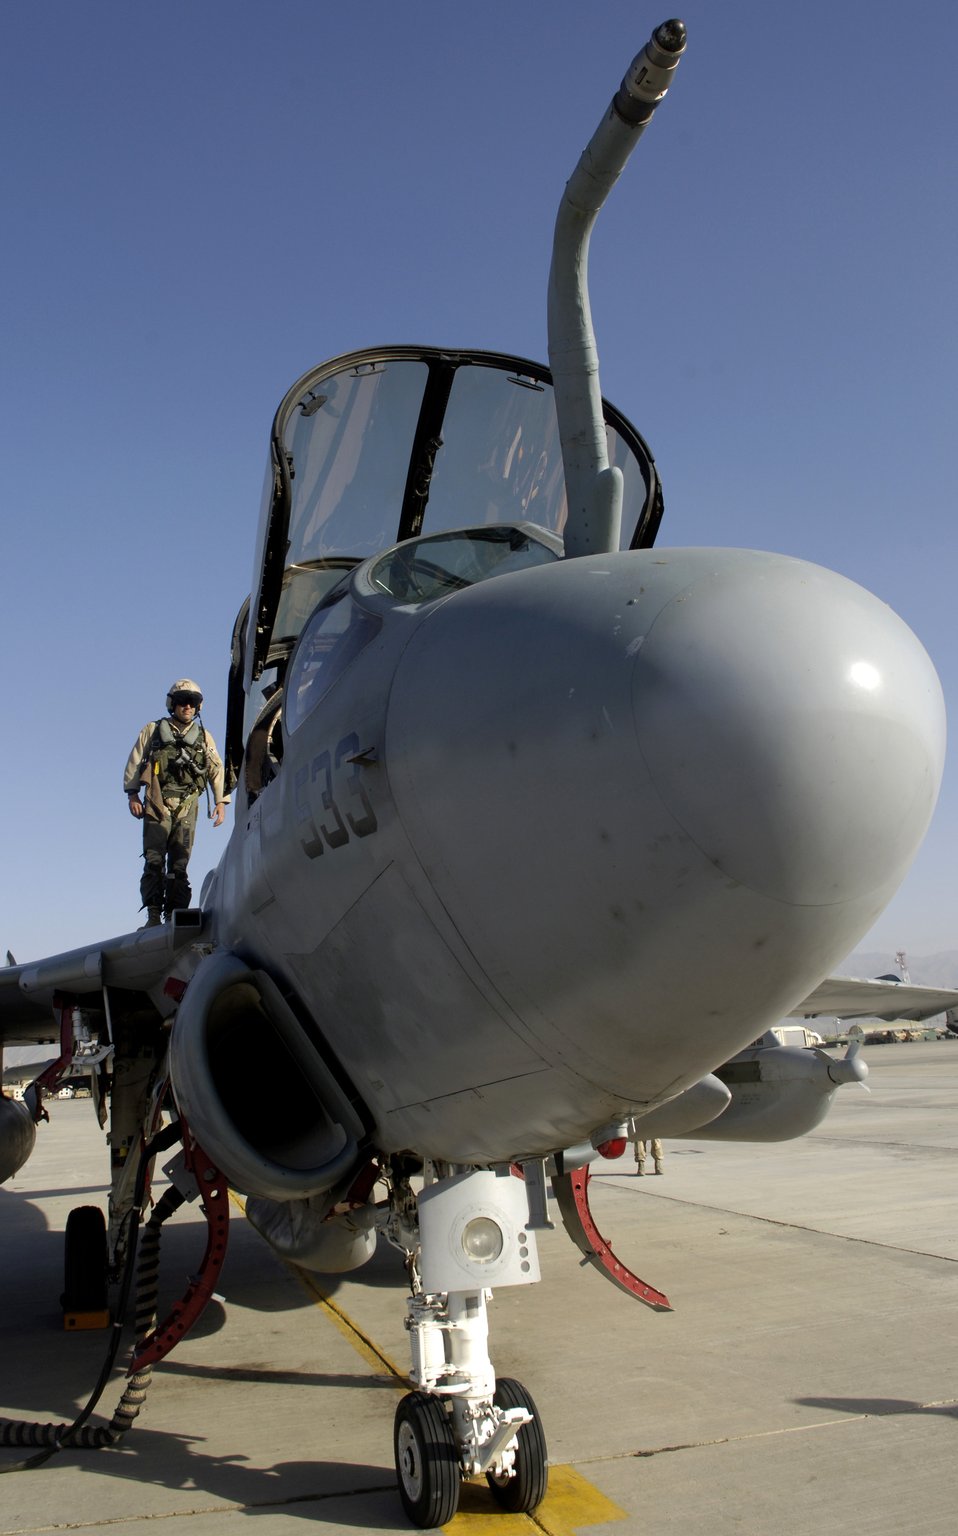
On the prowl

Air Force Capt. Matthew Polus checks a Navy EA-6B Prowler before take-off from Bagram Air Base, Afghanistan, on Thursday, June 15. Captain Polus is an electronic countermeasures officer with the Electronic Attack Squadron 133 Wizards. Air Force and Navy crewmembers fly the Prowler, providing support to ground troops in Afghanistan.